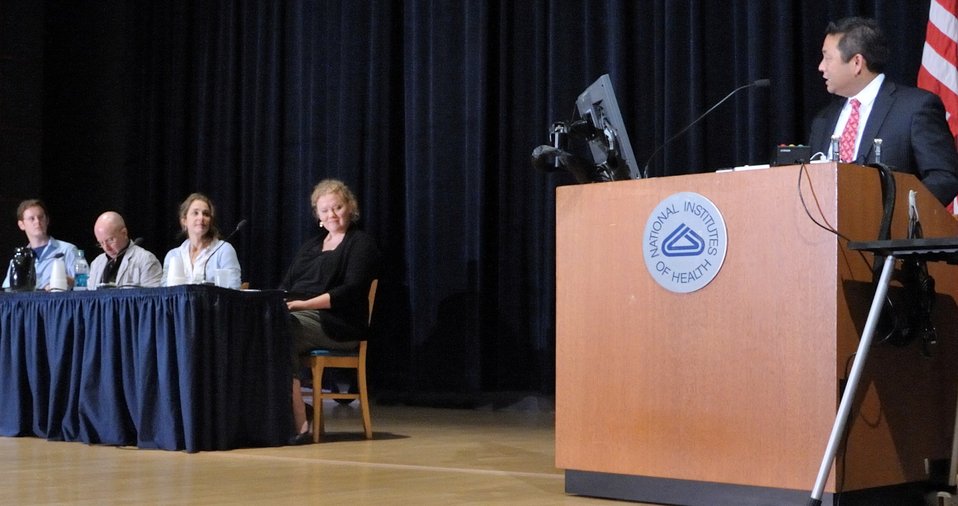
APP and Mineta2 - NIH Aug 2011

David Mineta (Deputy Director of Demand Reduction, White House Office of National Drug Control Policy) speaks at NIDA’s Addiction Performance Project, held Aug 5, 2011 on the NIH Campus